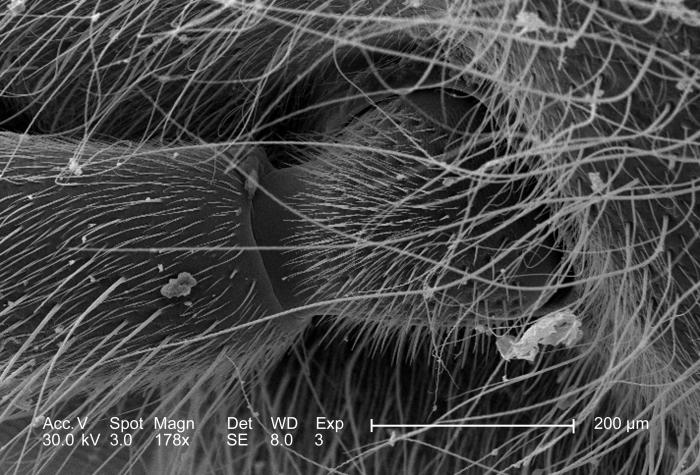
This scanning electron micrograph (SEM) depicted the ball and socket joint at the base of a Western honeybee's, Apis mellifera, right sensory antenna. Bees and ants possess what is termed a 'geniculate' type of antenna, which means that its morphologic appearance resembles a bent elbow; Magnified 178x.